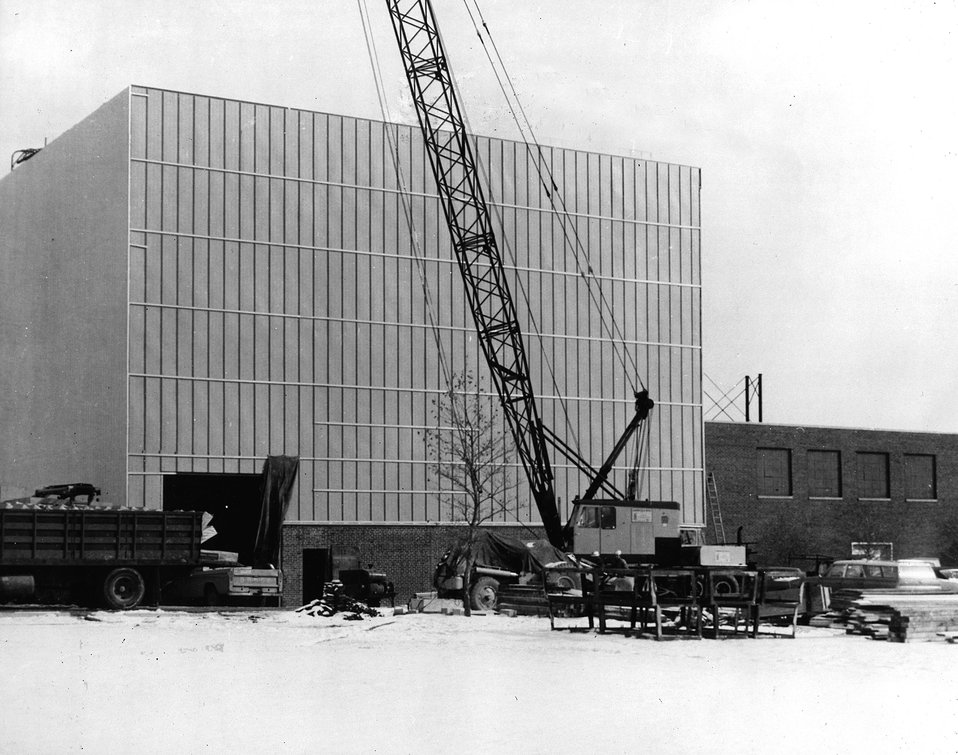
A new hot cell facility, being built by the Columbus Laboratories of Battelle to serve research needs of the nuclear power and electric utility industries, nears completion. c. 1971